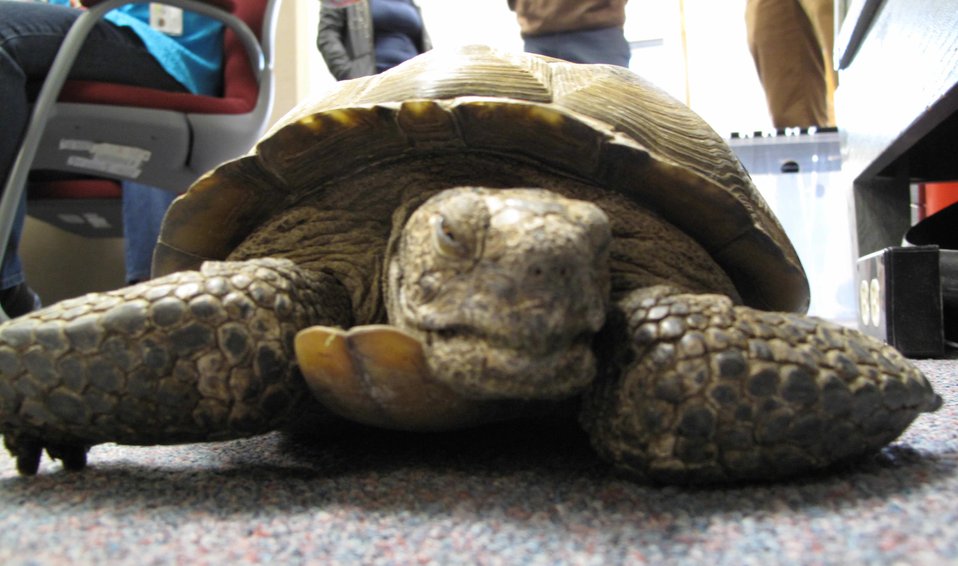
Crush the Desert Tortoise